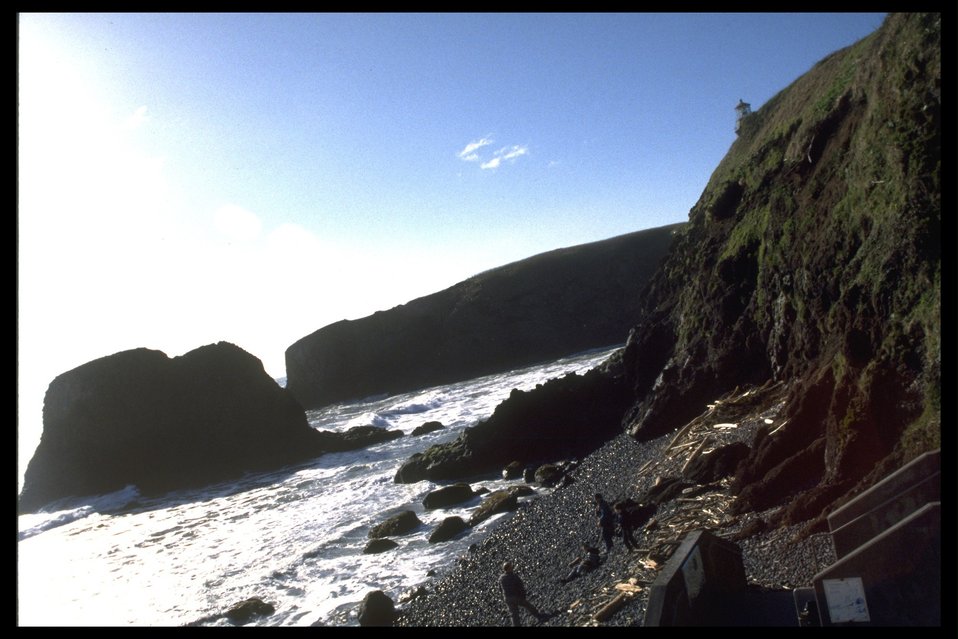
Along beach near Yaquina Head lighthouse.